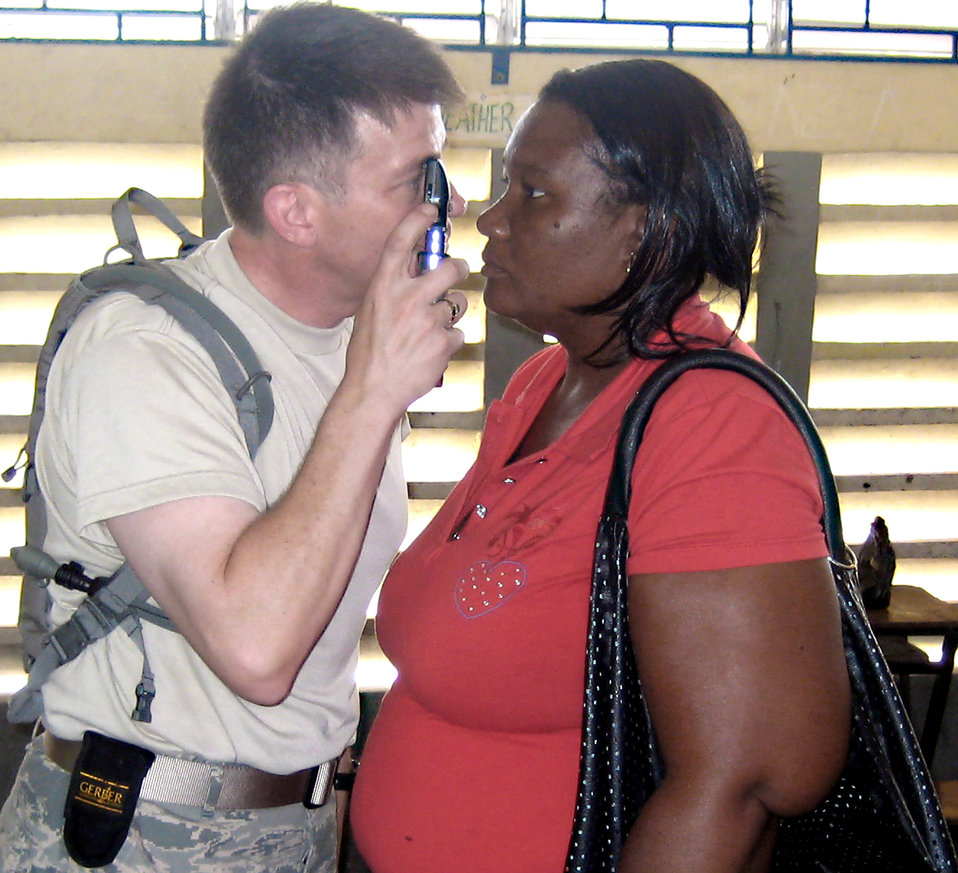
Airmen go 'Beyond the Horizon' to help Jamaicans

Lt. Col. (Dr.) John Murphy gives an eye exam to a patient April 16 in Jamaica. Colonel Murphy is an optometrist with the Arizona Air National Guard's 162nd Fighter Wing.